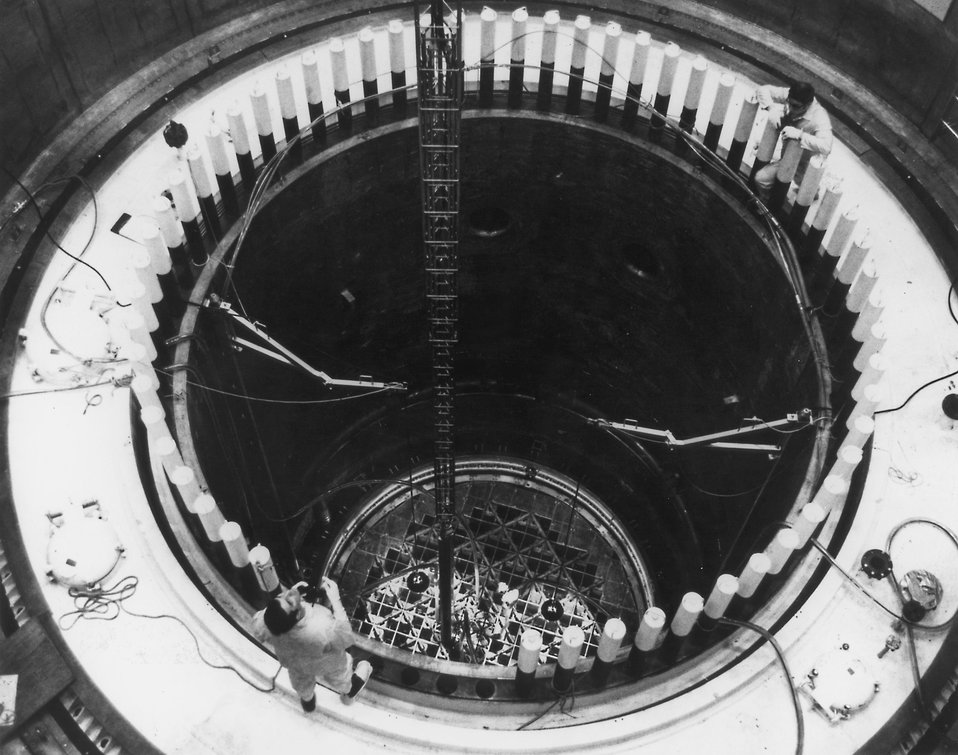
Fuel loading in the boiling water reactor at the Vermont Yankee Generating Station near Vernon, Vt. Circa 1974.